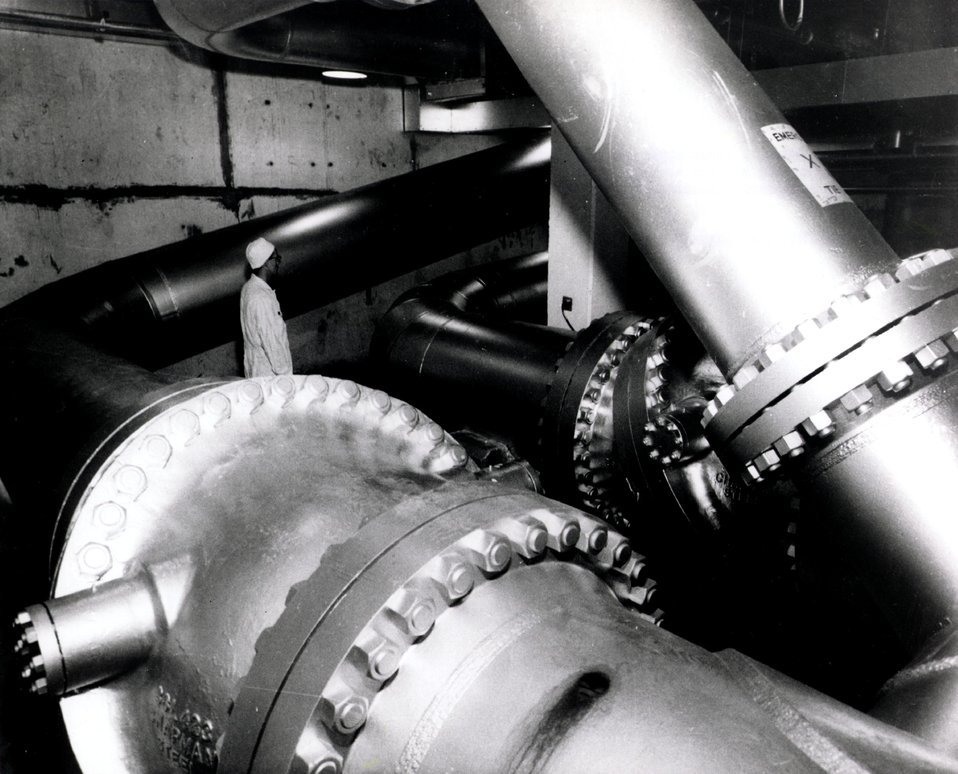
Huge piping used in transporting all important reactor cooling water is shown at one of the plutonium production reactor area at Hanford. Circa 1964.